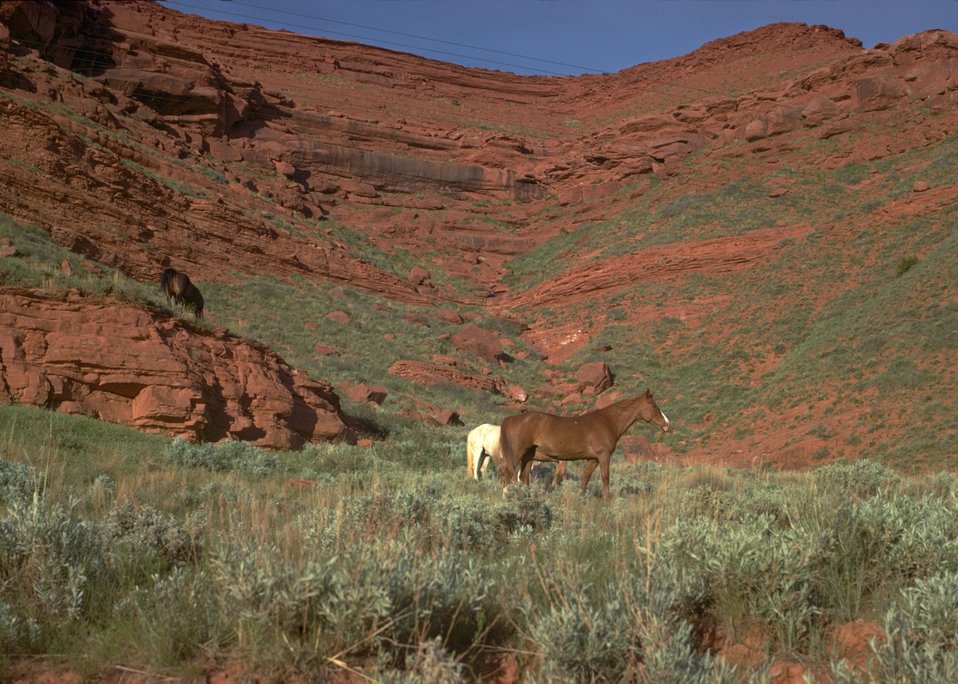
Wild horses near Red Canyon